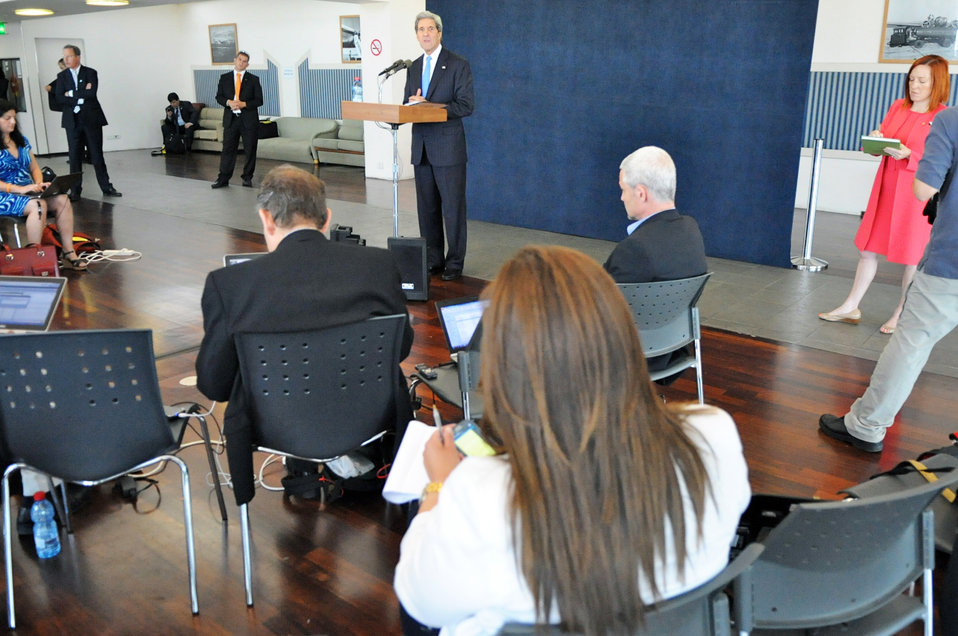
Secretary Kerry Listens as Wafa News Agency and Palestinian TV's Christine Rinawi Asks a Question

U.S. Secretary of State John Kerry listens as Christine Rinawi of the Wafa News Agency and Palestinian TV asks him a question during a news conference in Tel Aviv, Israel, on May 24, 2013.